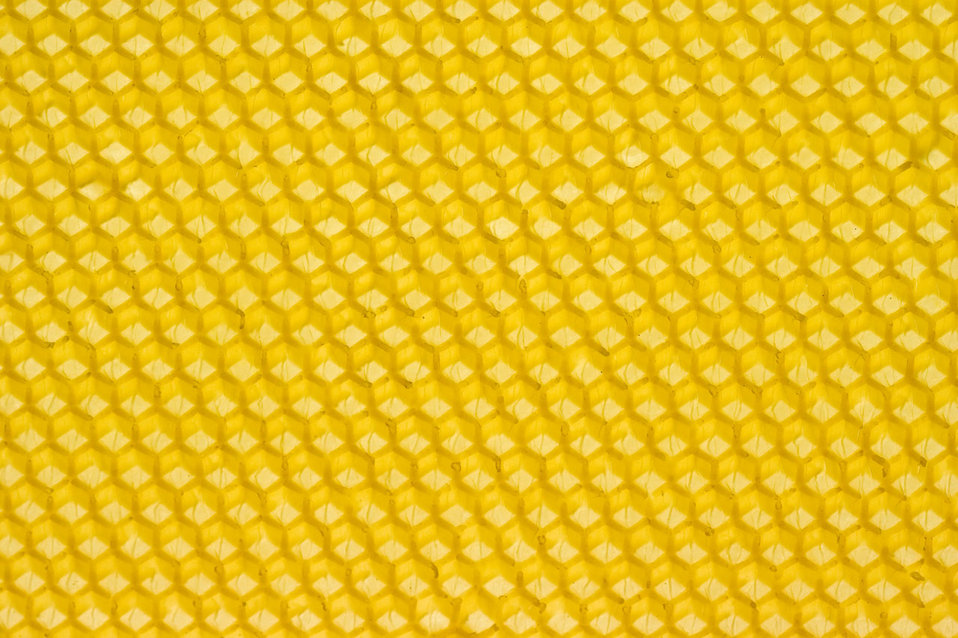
Honeycomb template for bees to work on.